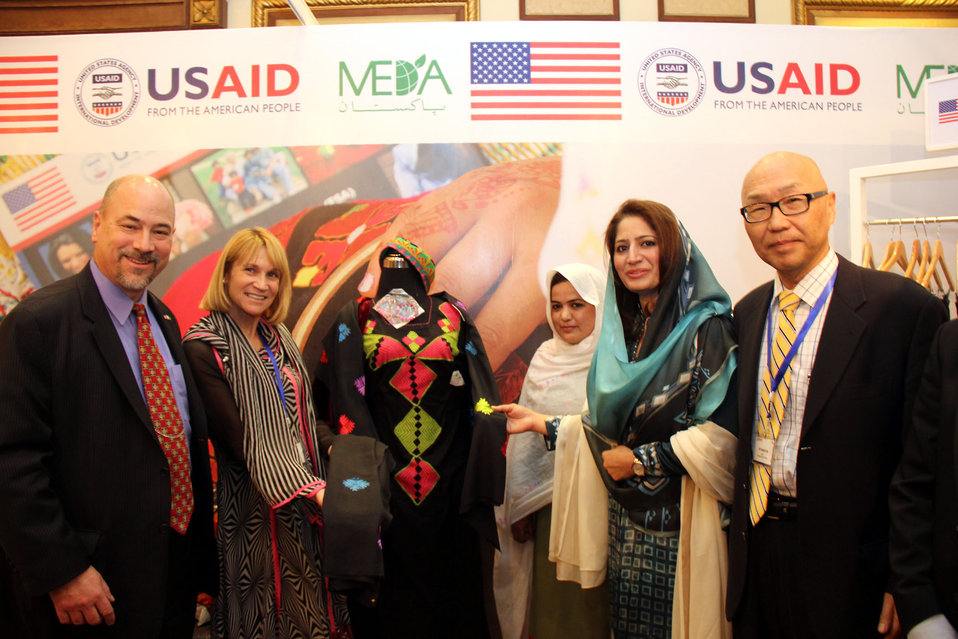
USAID’s Entrepreneurs Project

Ms. Rubina Sadaat Qaimkhani, Minister for Women Development and USAID Deputy Mission Director, Sindh visiting a stall at Pakistan Hand Embellished Fabrics Industry Conference organized by USAID’s Entrepreneurs Project.